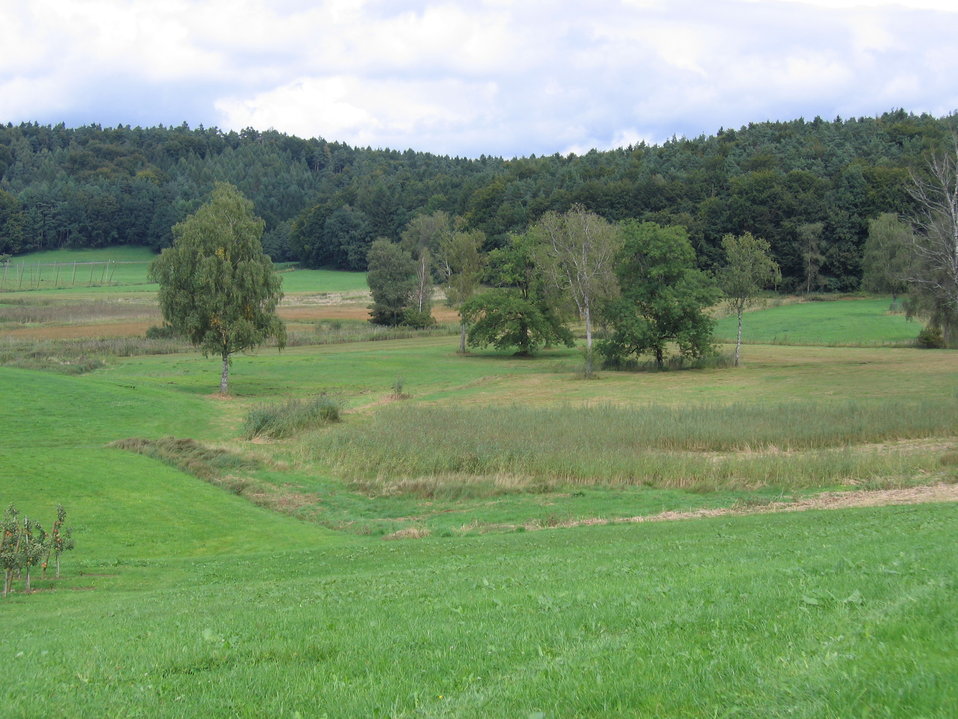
Deutsch: Deutschland - Baden-Württemberg - Bodenseekreis - Kressbronn am Bodensee - Berg: NSG 'Berger Weiher'